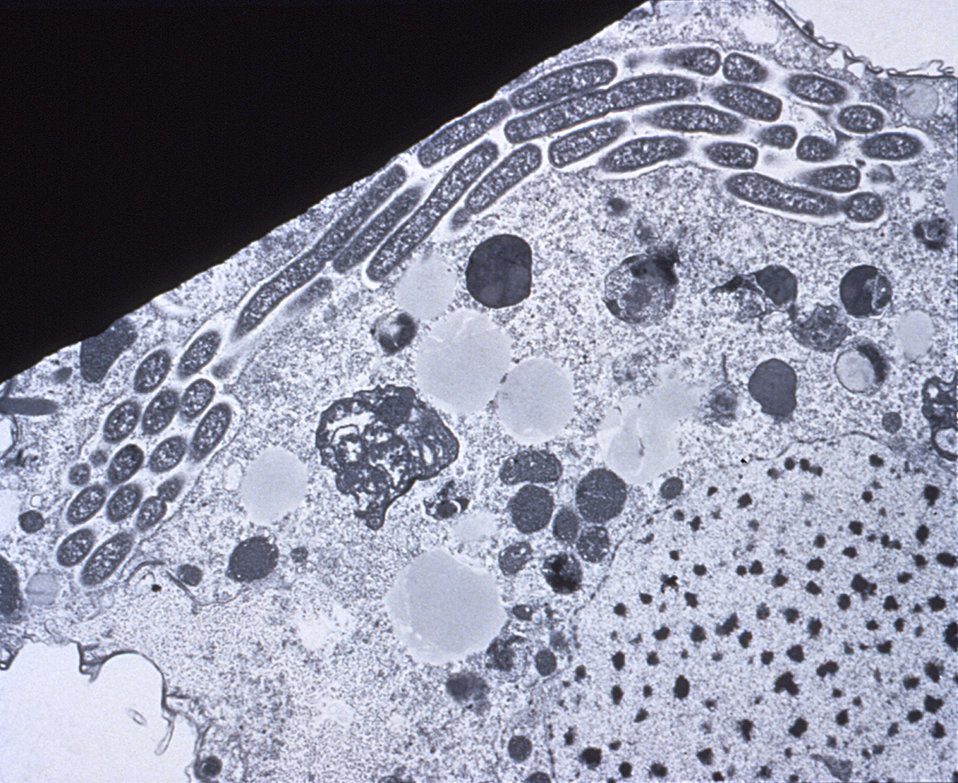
This transmission electron micrograph (TEM) of an infected Tetrahymena pyriformis protozoa reveals in cross section, a chain of intracellular Legionella pneumophila bacteria.